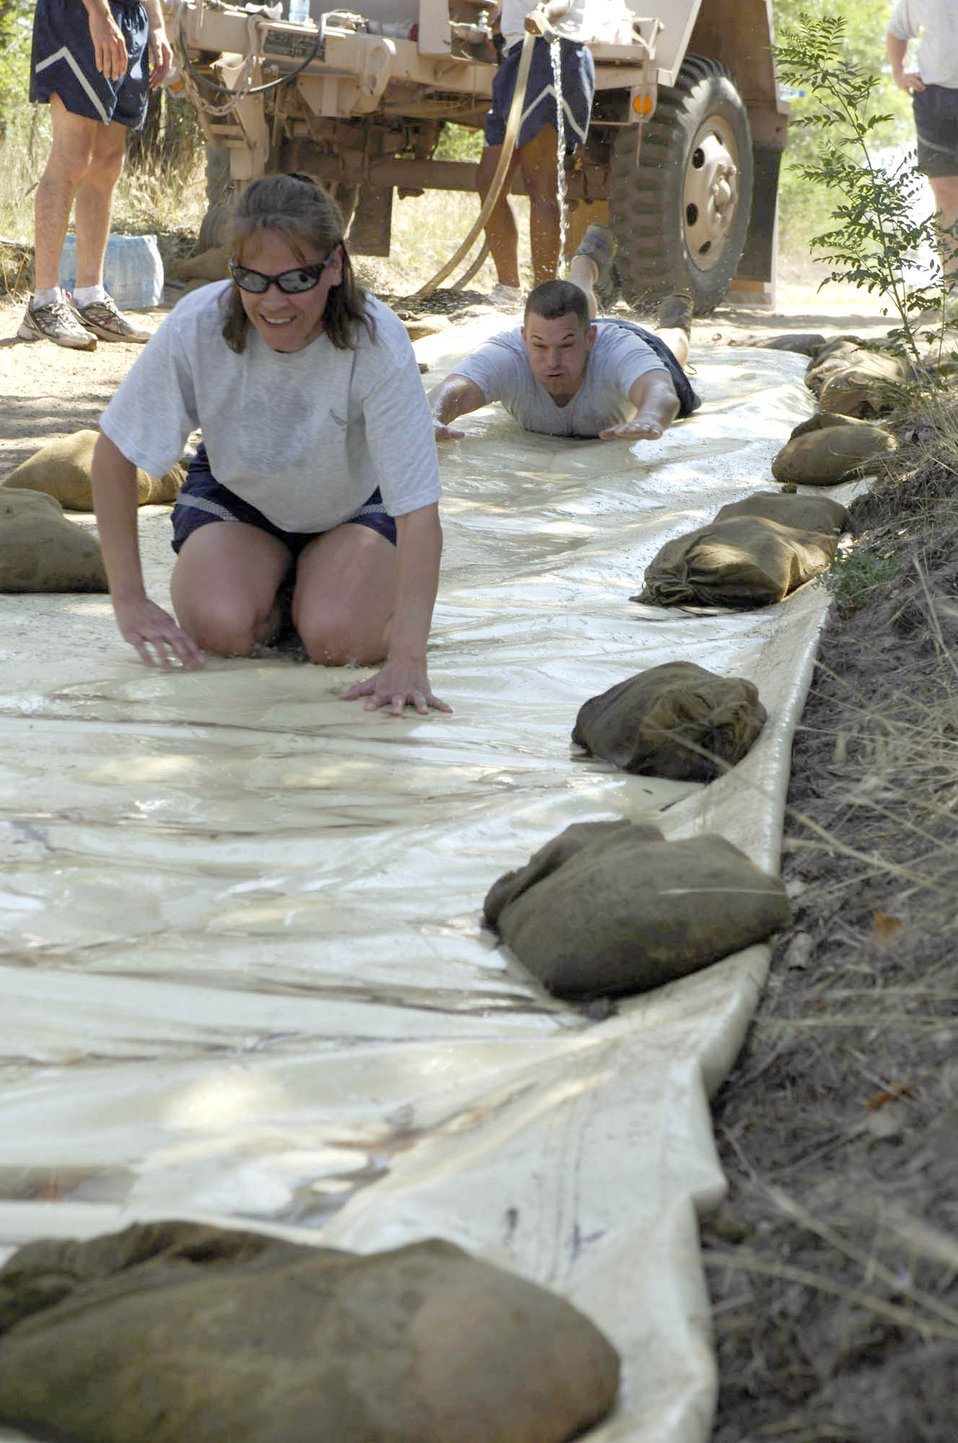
Kyrgystan 5K Mud Run

Tech. Sgt. Candis Winslow and Tech. Sgt. Paul Braun, both of the 376th Air Expeditionary Wing staff, embrace the slip 'n slide obstacle during the 5K mud run at the Transit Center at Manas, Kyrgyzstan, July 11, 2010.